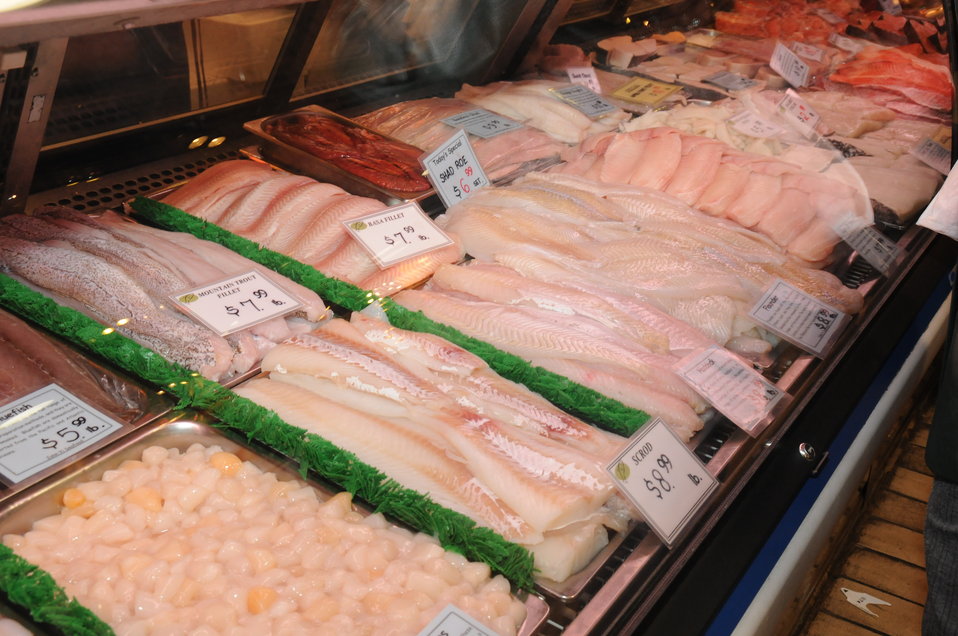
The Reading Terminal Market offers produce fresh from the field to the people of Philadelphia, PA on April 3, 2009. There are Amish specialties, fruits, vegetables, meats, seafood, and poultry. Reading Terminal Market opened for business in 1892 with approximately 78,000 square feet and almost 800 spaces for vendors. The Market was revitalized in the 1990’s and today is still the gastronomic bazaar that its original planners had envisioned. Many of the historic Market stands survived the reconstruction and are once again filled with local produce, fresh eggs, milk, meats, poultry, seafood, handmade crafts, jewelry, and clothing. The Market is home to more than 80 merchants, two of whom are descendants of the original stand holders from a century before.